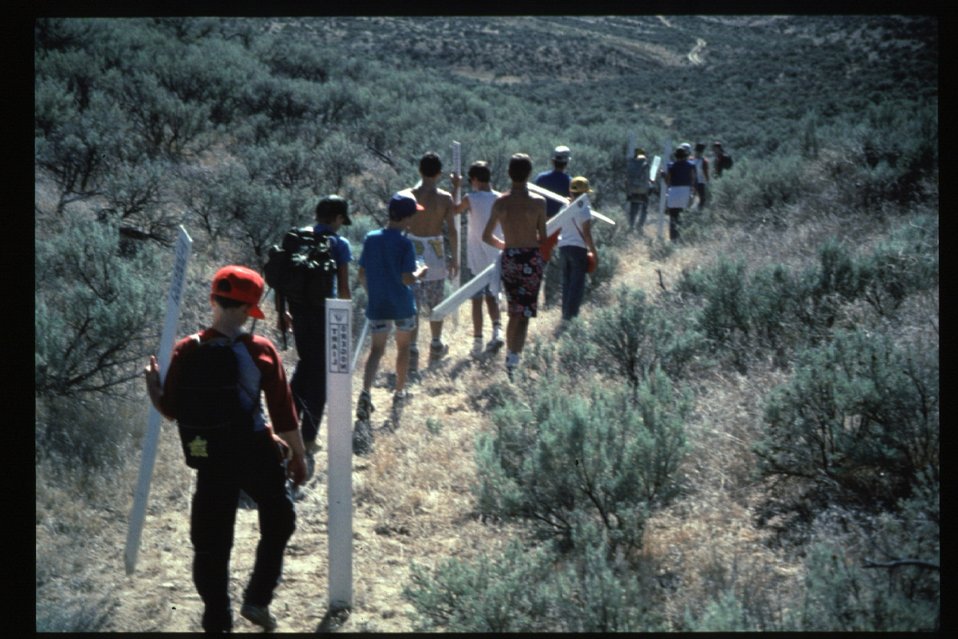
Cultural Oregon Trail LSRD Lower Snake River District